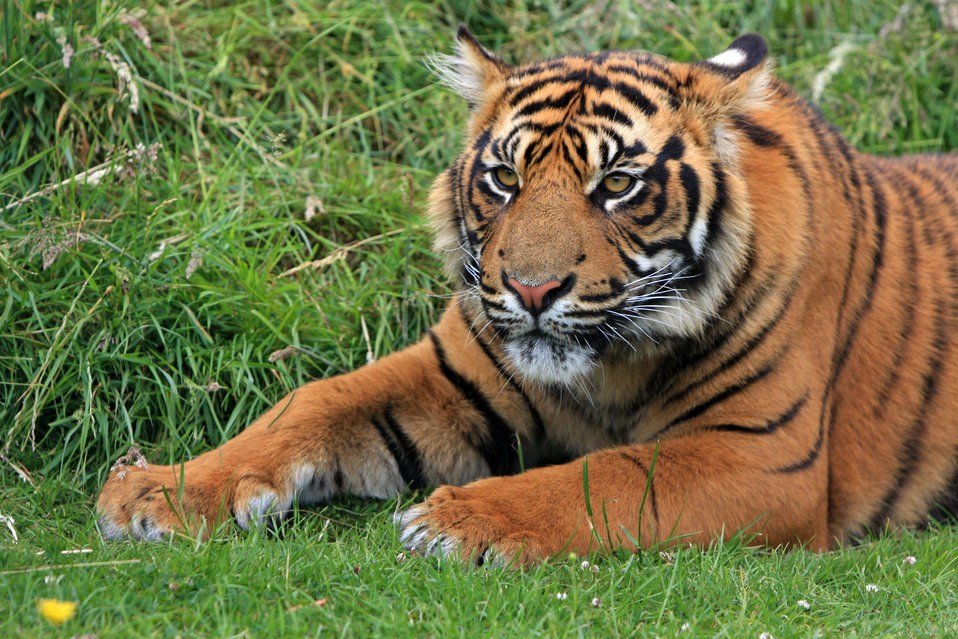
Tiger cub portrait

Beautiful portrait of a young sumatran tiger cub laying on the grass.